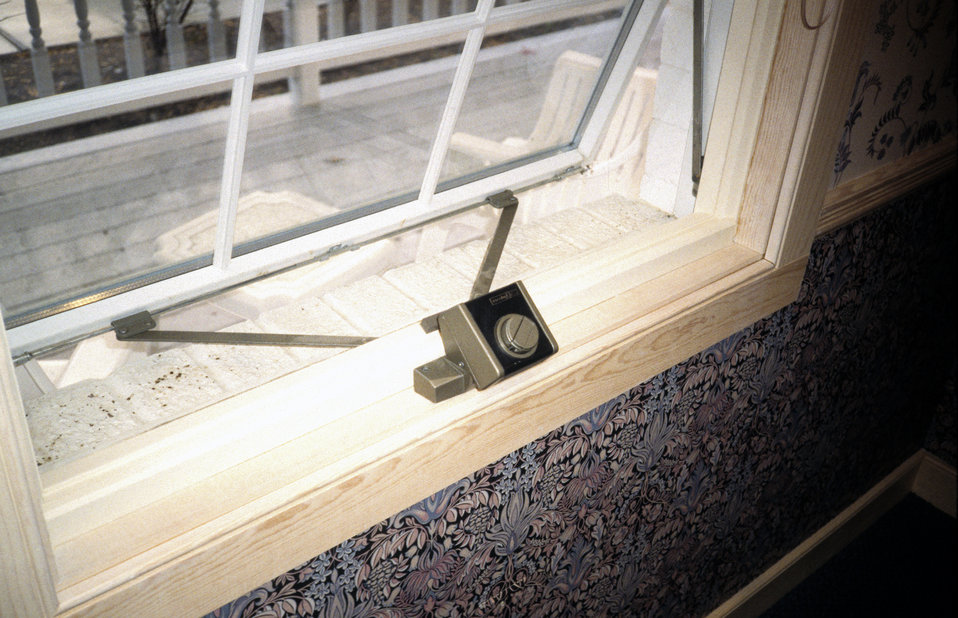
This 1995 image depicted an electronically controlled casement window mechanism. The window, opened here in this photograph, was opened and closed with a mere turn of a knob, which was installed conveniently on the casement at the sill level, thereby, facilitating usability for those confined to a wheelchair, or very short users. The ease with which one could rotate the control dial, as well as its placement, showed that the needs of those who were mobility-impaired were taken into account when designing this motorized mechanism. These can often replace the manual crank if the manual crank cannot be reached, or if the crank is too difficult to manipulate. The electric mechanism can also be switched remotely.